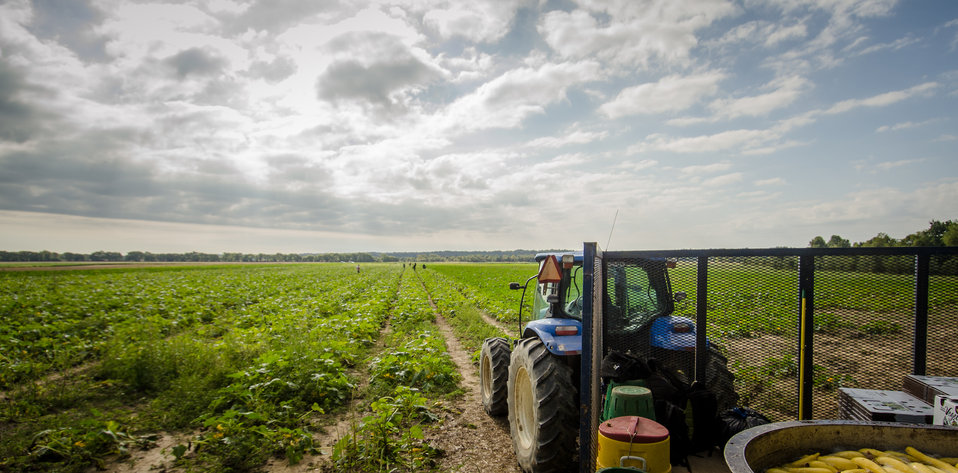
Migrant workers pick yellow squash, while a tractor pulls a processing trailer with a rinse tub and new boxes for the squash at Kirby Farms in Mechanicsville, VA on Sep. 20, 2013. Kirby Farms is a third-generation family farm that covers 500 acres, and generates produce and grains on a year-around operation.